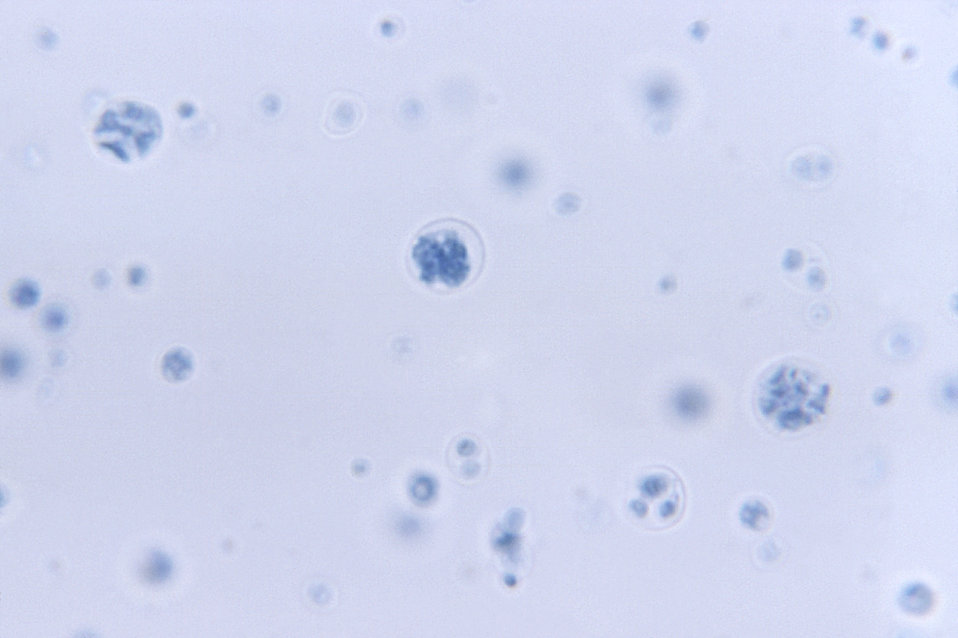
Under a magnification of 1125X, this photomicrograph revealed the presence of numbers of algal organisms, Prototheca wickerhamii, which were found within a tissue specimen. Though categorized taxonomically as an alga, it derives its sustenance as a saprophyte, consuming dead and decaying organic matter. This algal culture was prepared using a lactophenol cotton blue mount fixation technique.